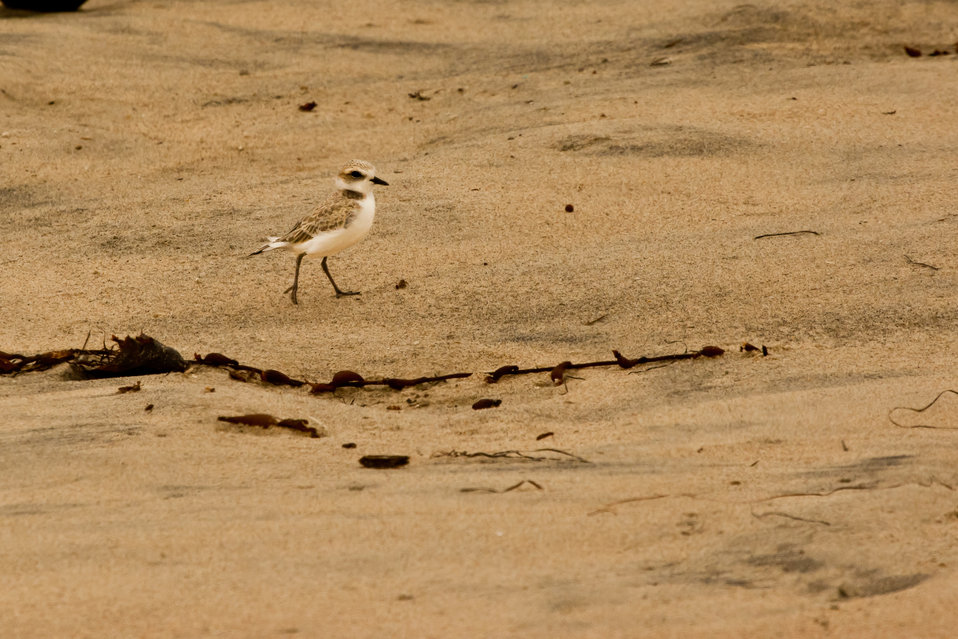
Female Western snowy plover